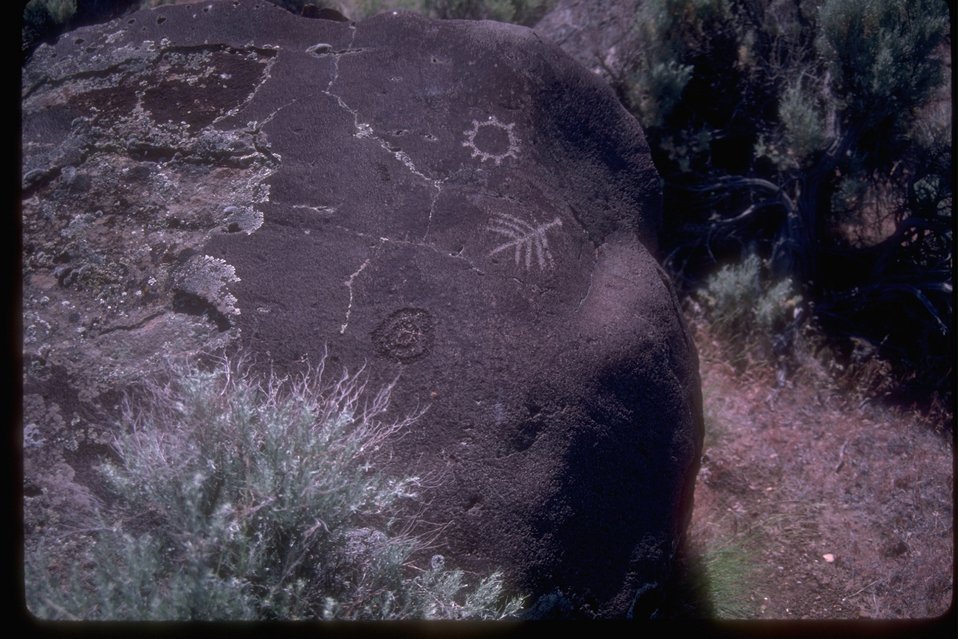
Pictograph located on large rock in sagebrush area.